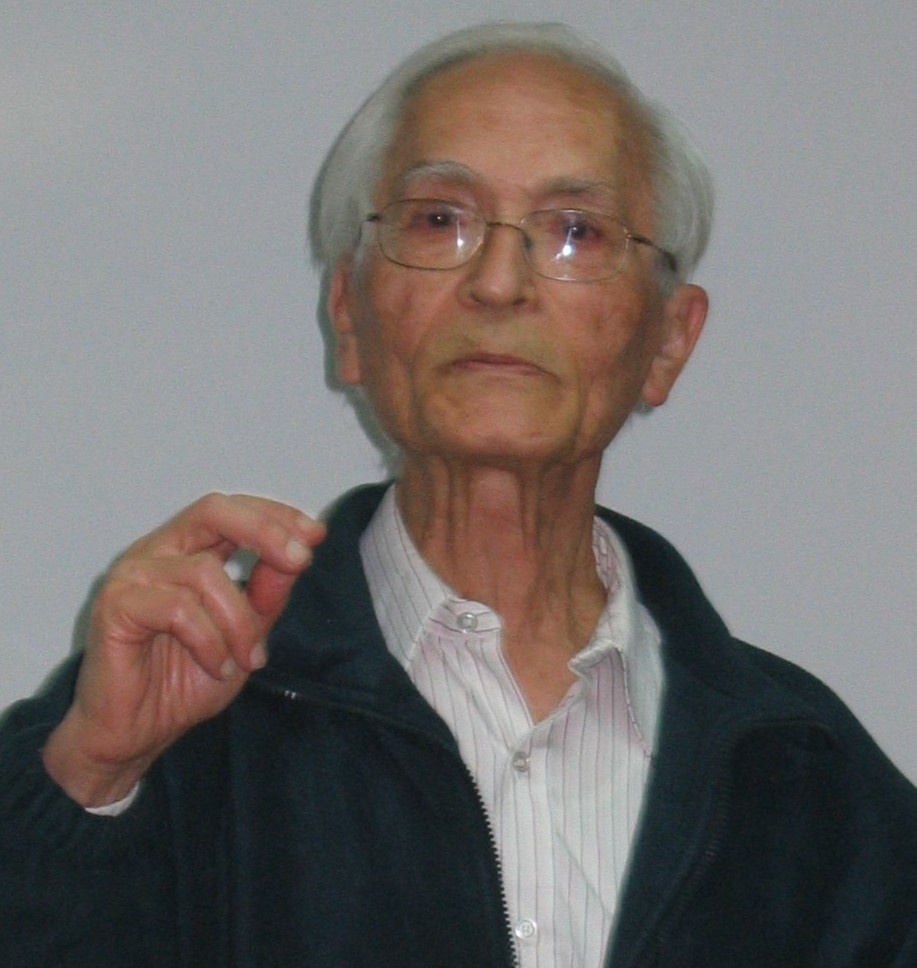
Français : Jacob Ziv, lors d'une conférence